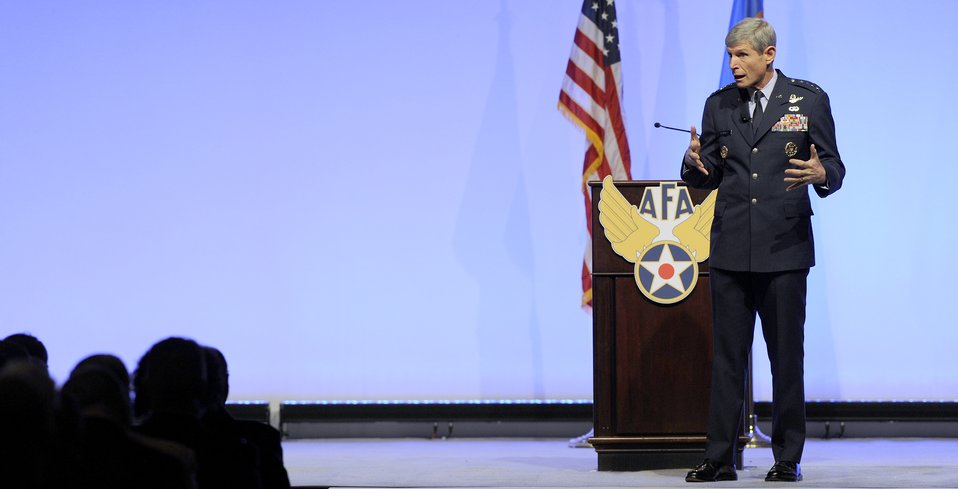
CSAF's AFA Kick-Off Speech

Air Force Chief of Staff Gen. Norton Schwartz answers questions from the audience following an address Feb. 23, 2012, during the Air Force Association's 2012 Air Warfare Symposium and Technology Exposition in Orlando, Fla. He told the attendees the Air Force will maintain its readiness despite the austere fiscal environment.